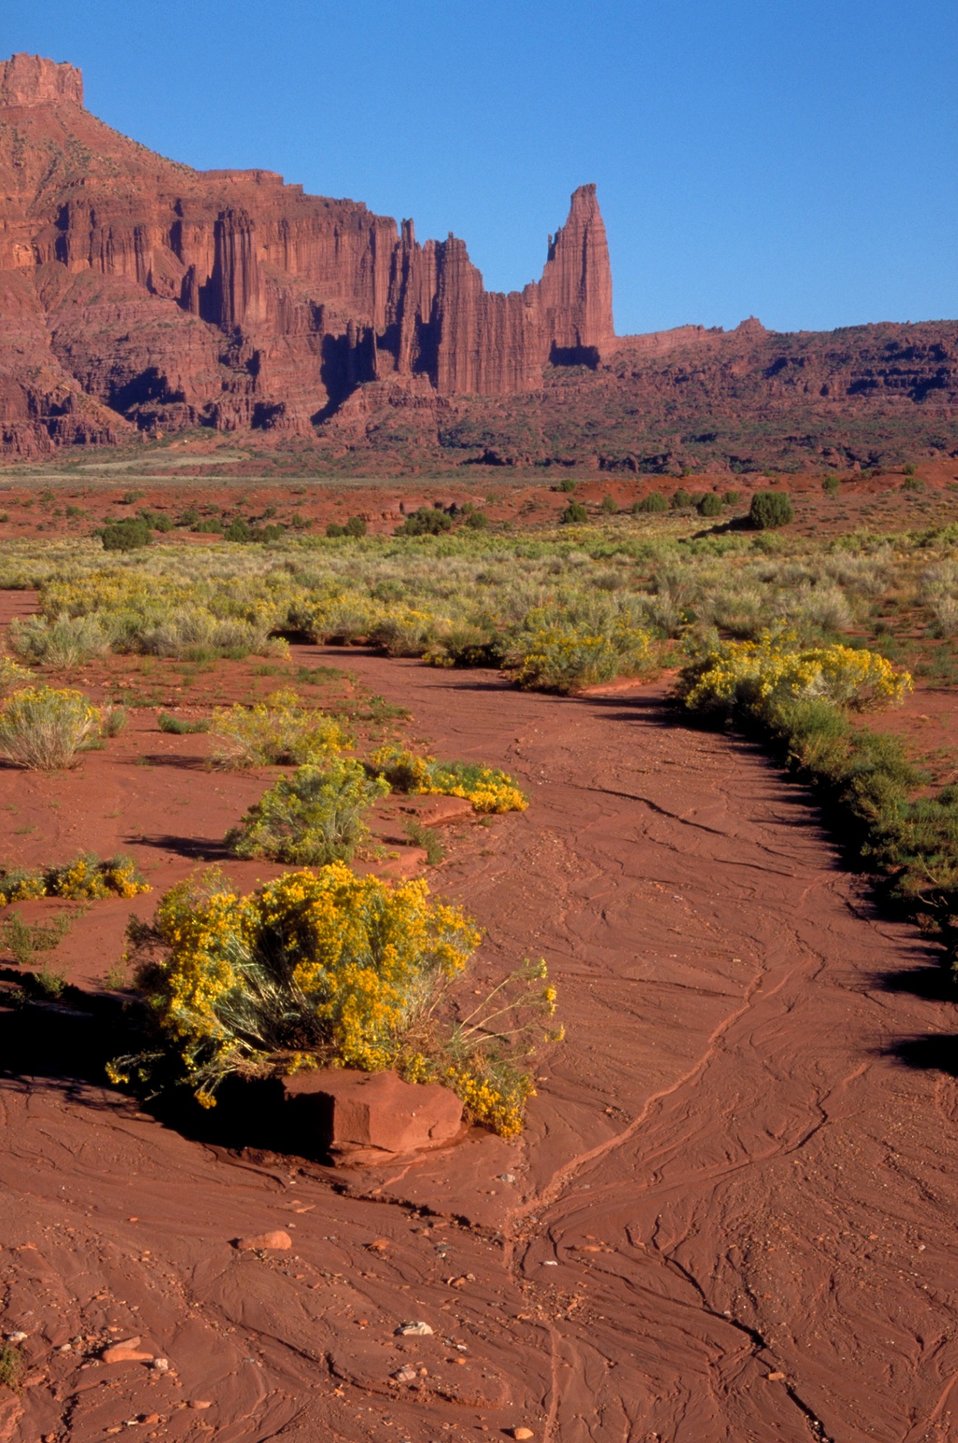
Fisher Towers along Highway 128, near Moab, Utah.